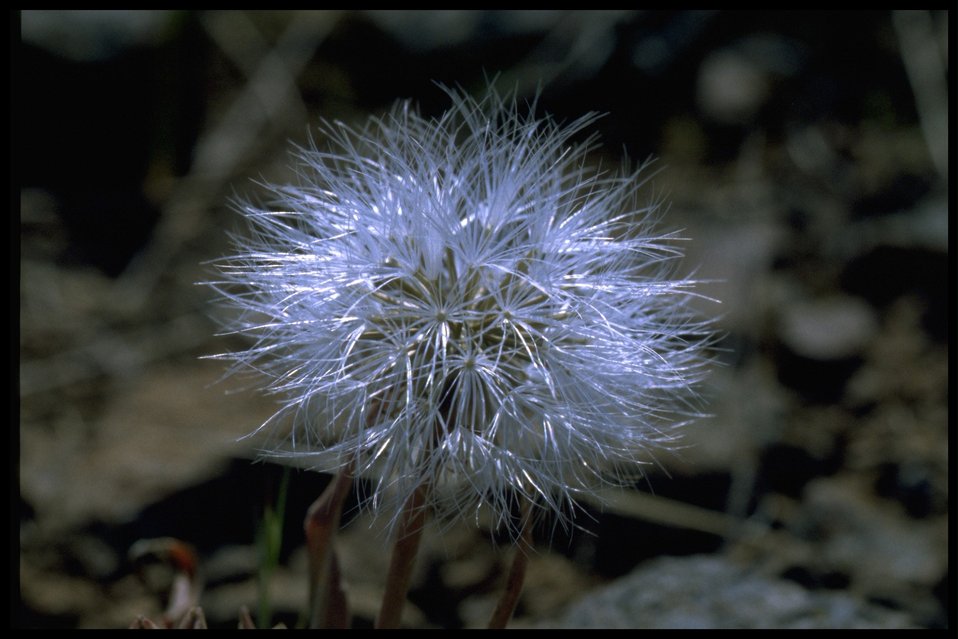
Closeup shot of seedhead, False Agoseris wildflower.